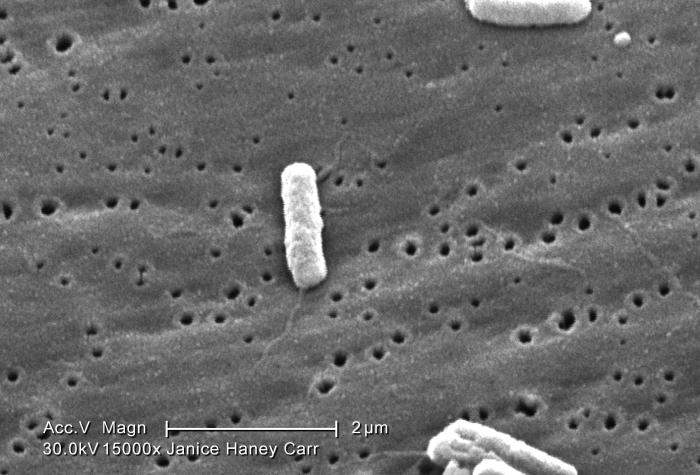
Under a very high magnification of 15000X, this scanning electron micrograph (SEM) depicted a number of Gram-negative Legionella pneumophila bacteria. Please see PHIL 11092 through 11152 for additional SEMs of these organisms, specifically PHIL 11142 for a colorized version of this image. Of particular importance, is the presence of polar flagella, and pili, or long streamers, which due to their fragile nature, in some of these views seem to be dissociated from any of the bacteria. For a better view of these bacterial appendages, see the colorized version.